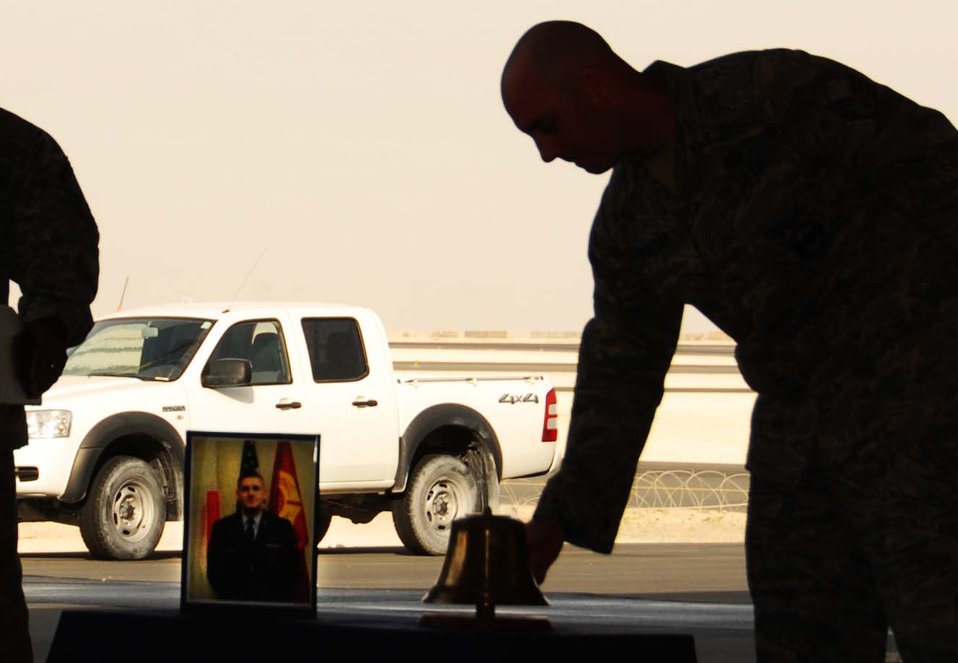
Airman Kozorosky deployed memorial

A firefighter assigned to the 379th Expeditionary Civil Engineer Squadron Fire Protection Flight, rings the final alarm for Senior Airman Derek Kozorosky, a fallen firefighter, during a memorial service Feb. 16, 2011, in Southwest Asia. Airman Kozorosky died Feb. 11, 2011, after a vehicle incident at Kadena Air Base, Japan.